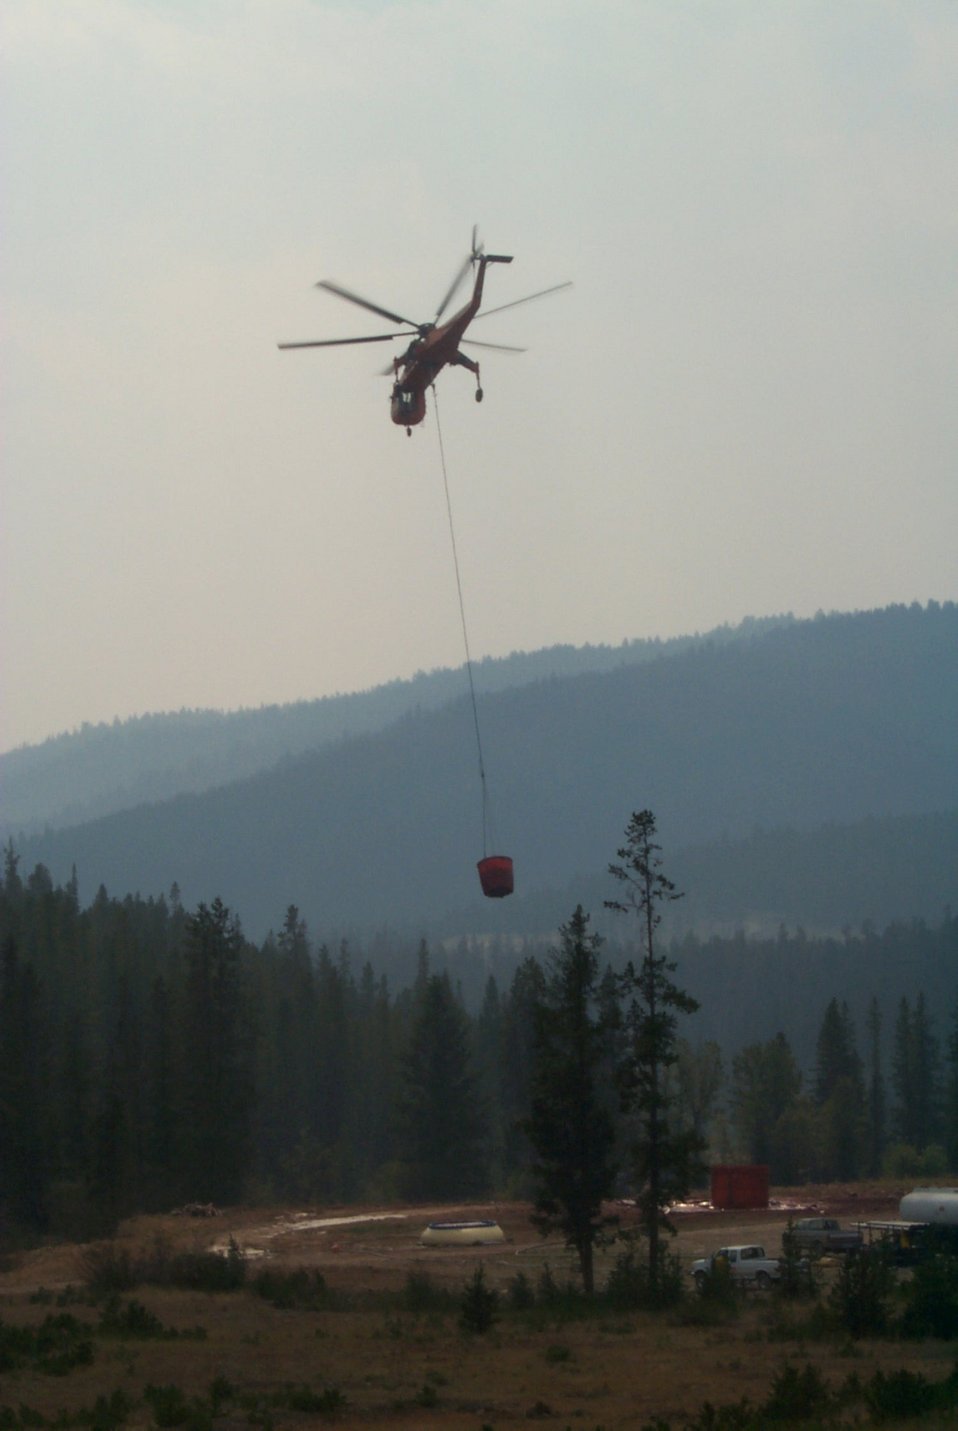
Helicopter drops Fire Clearwater Fire Salmon Field Office USRD Upper Snake River District